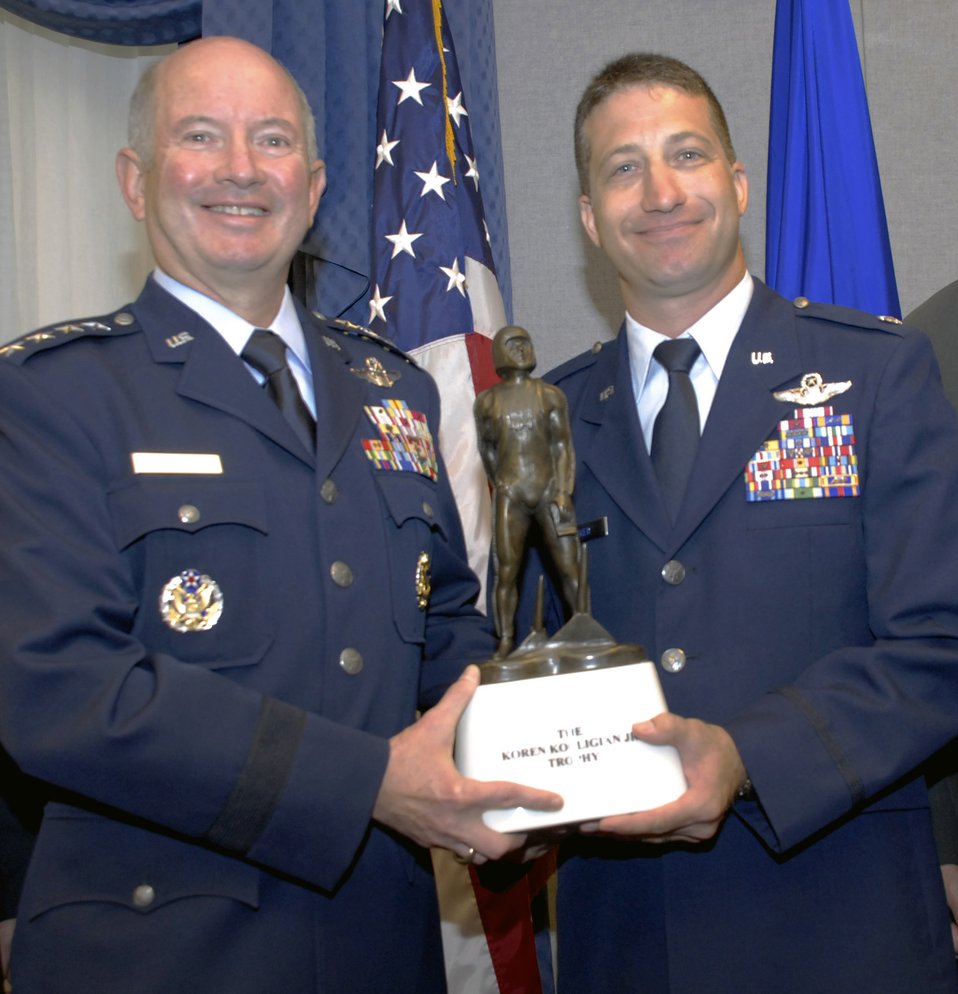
Pave Low pilot named Kolligian Award recipient

Vice Chief of Staff Gen. Duncan J. McNabb presents Lt. Col. Eugene V. Becker the Koren Kolligian Jr. trophy during a ceremony at the Pentagon June 9. Colonel Becker, asssigned to the 20th Special Operations Squadron at Hurlburt Field, Fla., was flying an MH-53M Pave Low helicopter on a training mission when it suffered a